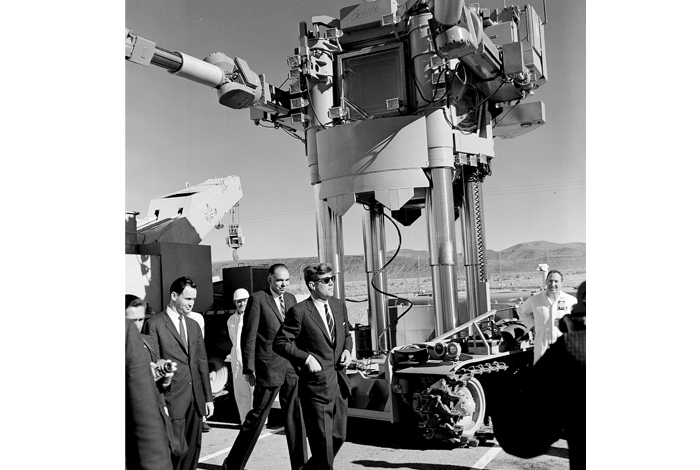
PRESIDENT JOHN F. KENNEDY VISITS AREA 400 MAD BUILDING AT LOS ALAMOS IN 1962.